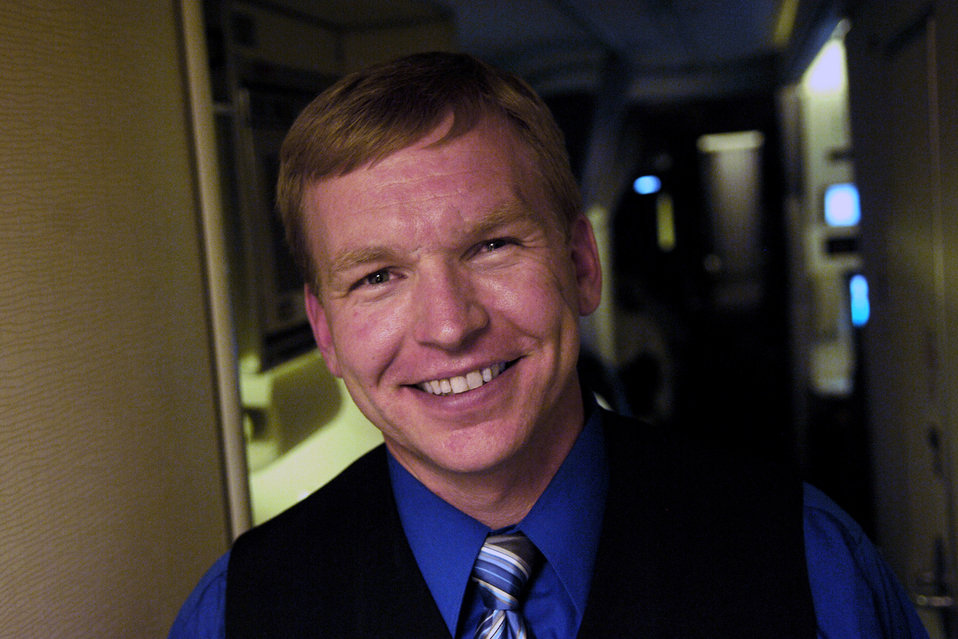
Wounded NCO's will to fly remains undaunted

Tech. Sgt. Christian MacKenzie was a special operations flight engineer on a MH-53 Pave Low helicopter until he was shot down in Iraq April 13, 2004. Despite losing the vision in his left eye, Sergeant MacKenzie continues to serve on active duty in the Air Force as a flight attendant based at Andrews Air Force Base, Md.